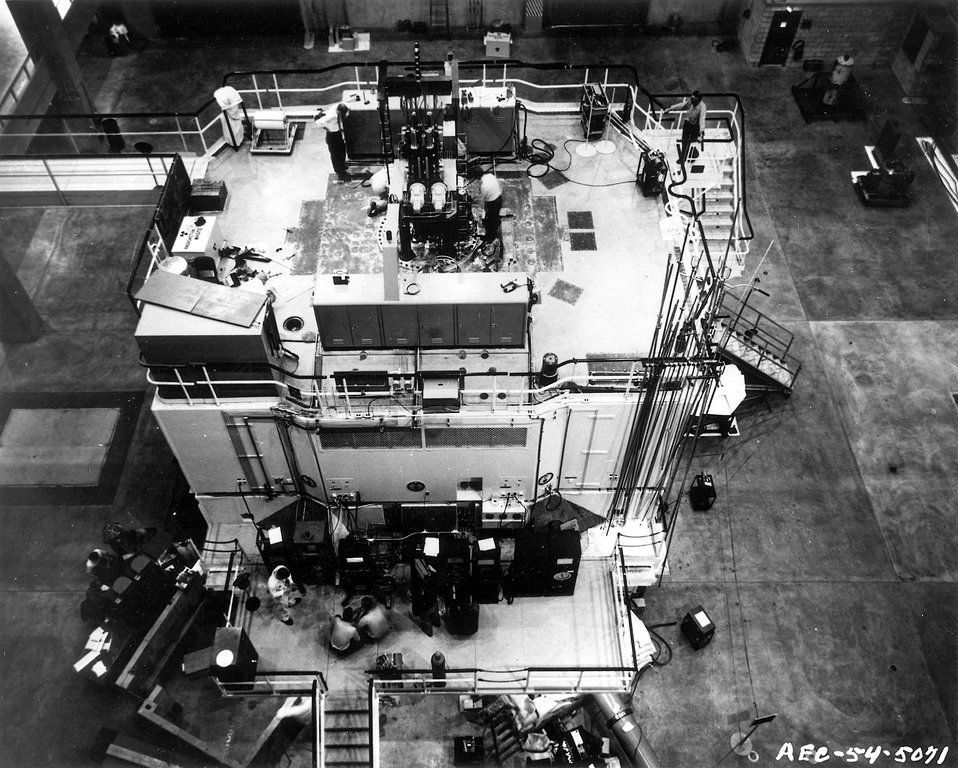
National Reactor Testing Station, Idaho... Materials Testing Reactor at the National Reactor Testing Station. Circa 1954.